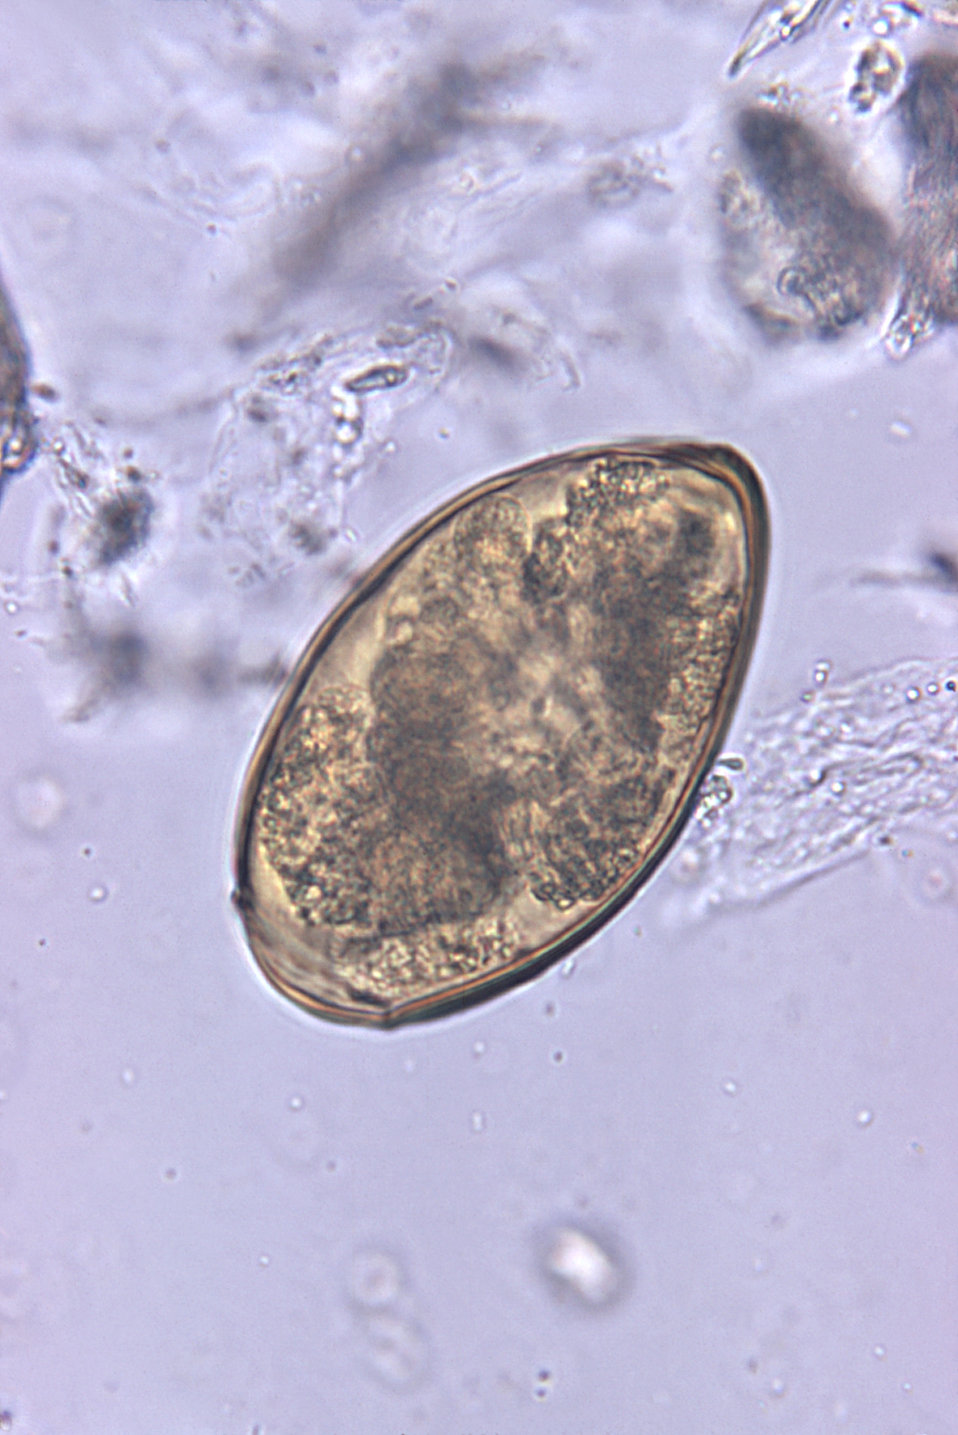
Magnified 500X, this photomicrograph of an unstained, formalin-preserved stool specimen mount, revealed the presence of a Paragonimus westermani termatode egg. See PHIL 3415 for the depiction of the following life cycle.